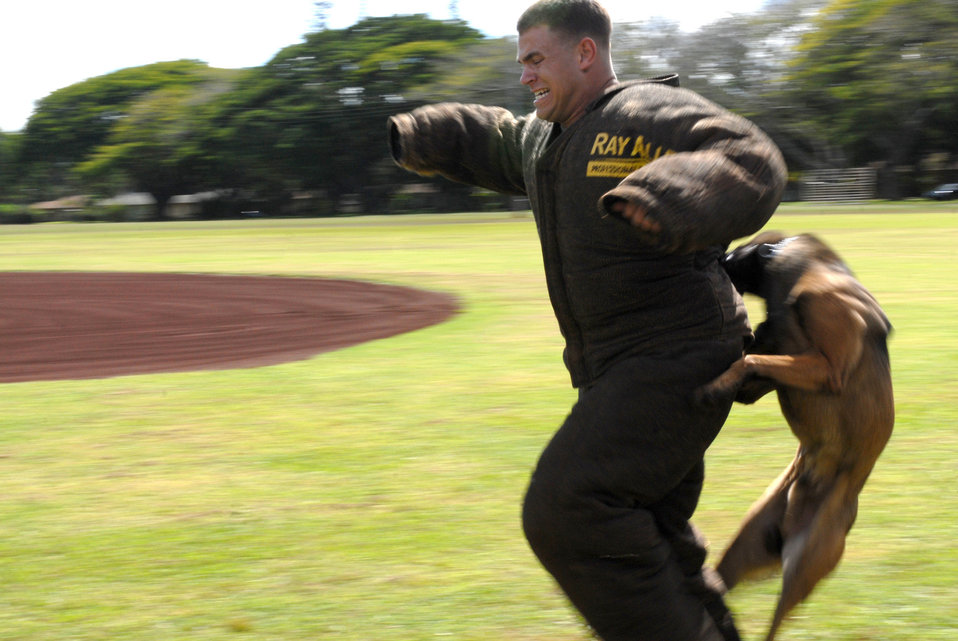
Working dog competition

Jimmy, a Belgian Malinois attacks a decoy during the 2010 Hawaiian Islands Working Dog Competition Nov. 19, 2010, at Schofield Barracks, Hawaii. Jimmy and his handler, Staff Sgt. Ricky Renfroe, won the handler protection/aggression and hardest-hitting dog competitions. They are assigned to the 647th Security Forces Squadron at Joint Base Pearl Harbor-Hickam.